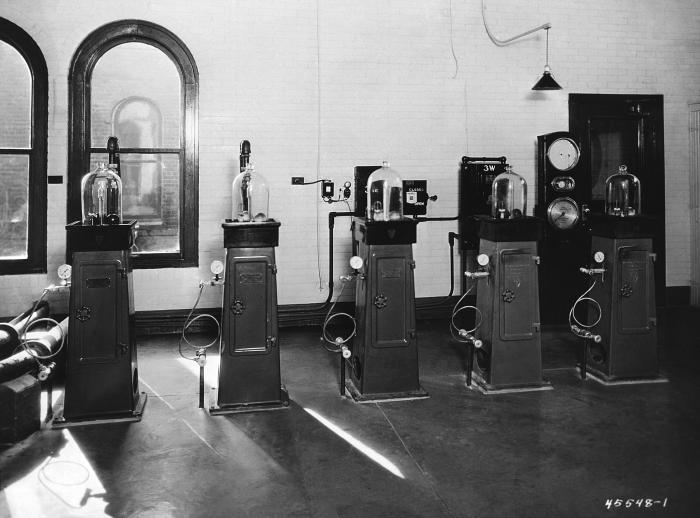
This historic 1917 photograph depicted a number of chlorinators that were used inside the Minneapolis, Minnesota water filtration plant. These filters provided continuous chlorination, which is a necessary step in the purification process of municipal water systems.